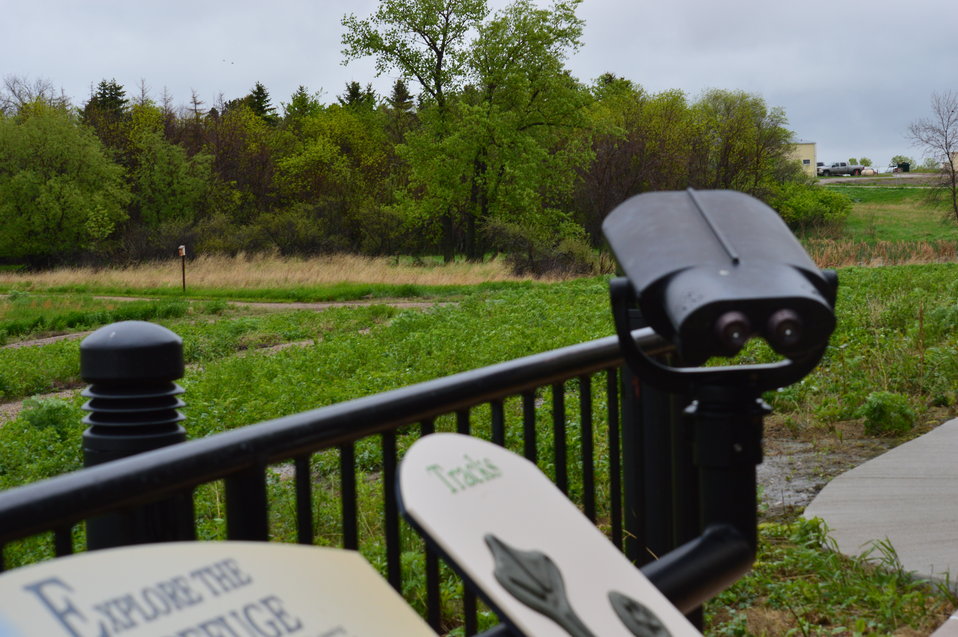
Binoculars for viewing wildlife

Scenery and wildlife and Audubon National Wildlife Refuge in North Dakota.